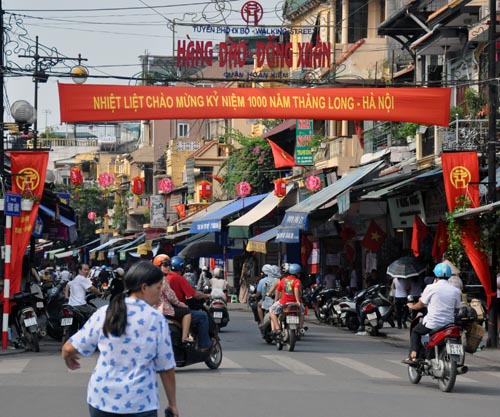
Hang Dao Street decorated for 1000th anniversary of Hanoi.